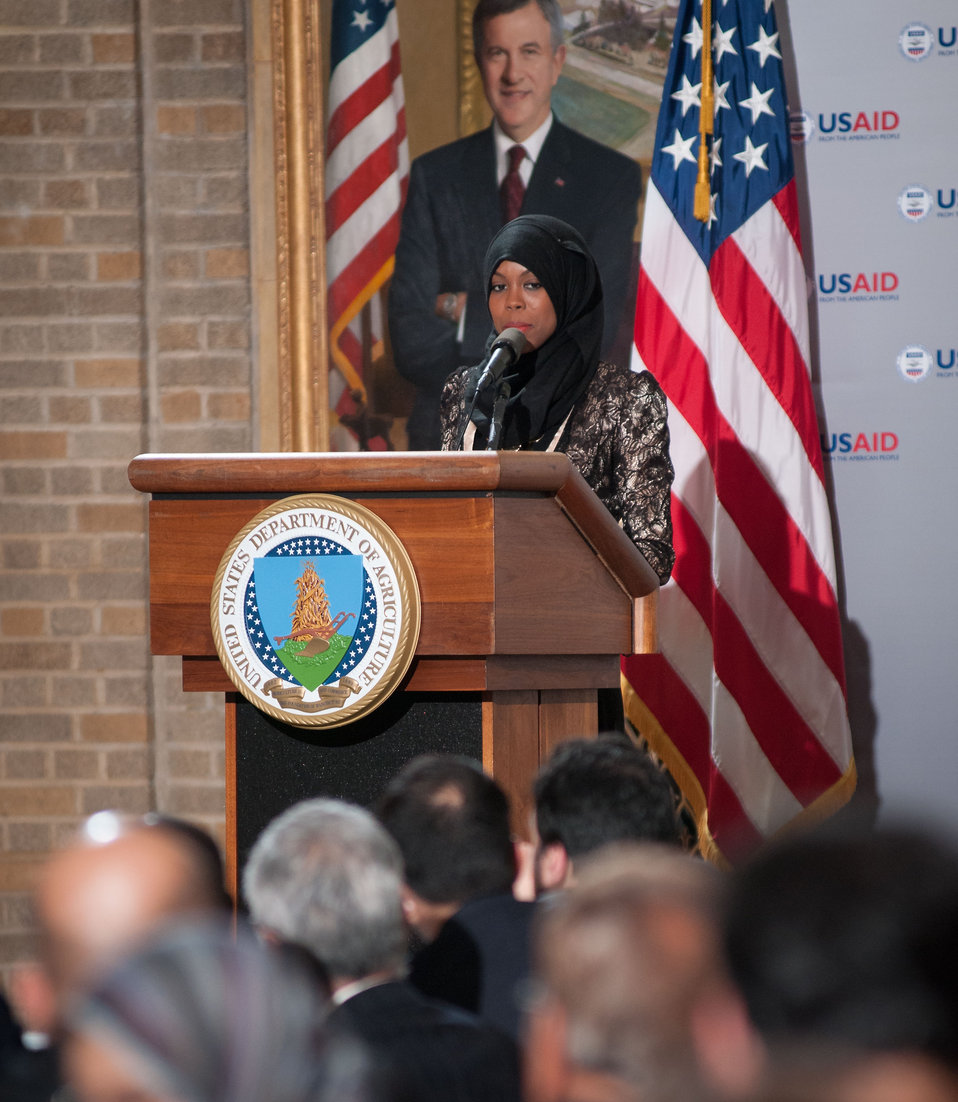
American Refugee Committee Community Engagement Assistant Ahukri Abdinur speaks to the guests, at the Iftar event, co-sponsored by the Iftar celebration, co-sponsored by the U.S. Department of Agriculture, U.S. Agency for International Development (USAID) and Islamic Relief USA, on Tuesday, August 7, 2012, in the USDA Whitten Building, in Washington, D.C. Ramadan is the month of fasting, intensive prayer, sacrifice and worship for Muslims around the world. Throughout this month, Muslims fast during the day, abstaining from consuming food from dawn to dusk and using this time to purify spiritually. Fasting reminds Muslims of the poverty and hunger suffered by many in the United States and worldwide. It is a connection with those who are hungry not through devotion, but through the many global factors that lead to hunger and famine. Iftar is the meal at which Muslims break their fast at sunset, usually by eating dates, according to the Prophetic tradition.